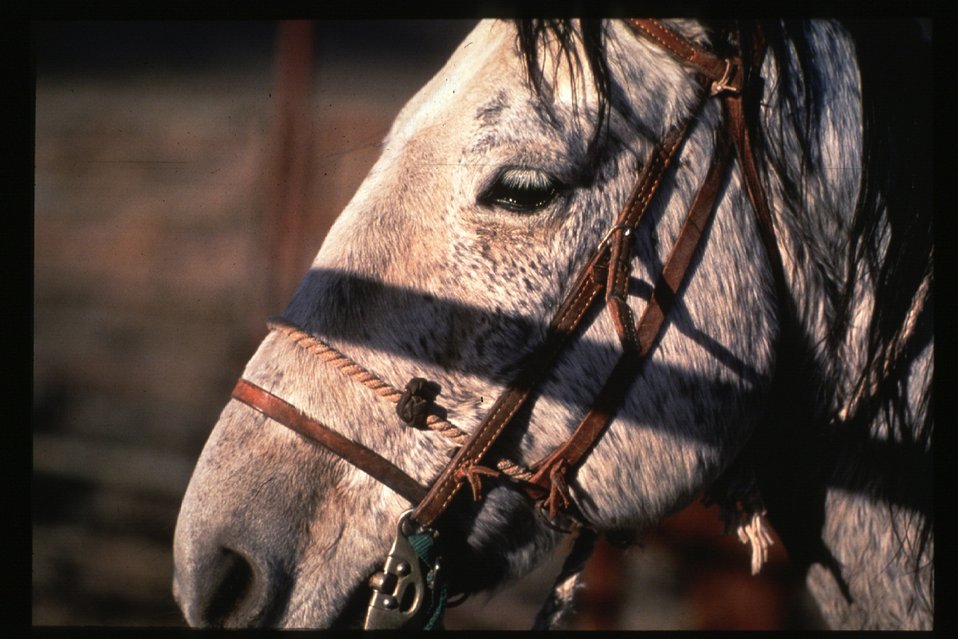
Horse Wild Horse and Burro Adoptions Program Owyhee Field Office Boise Corrals Lower Snake River District LSRD